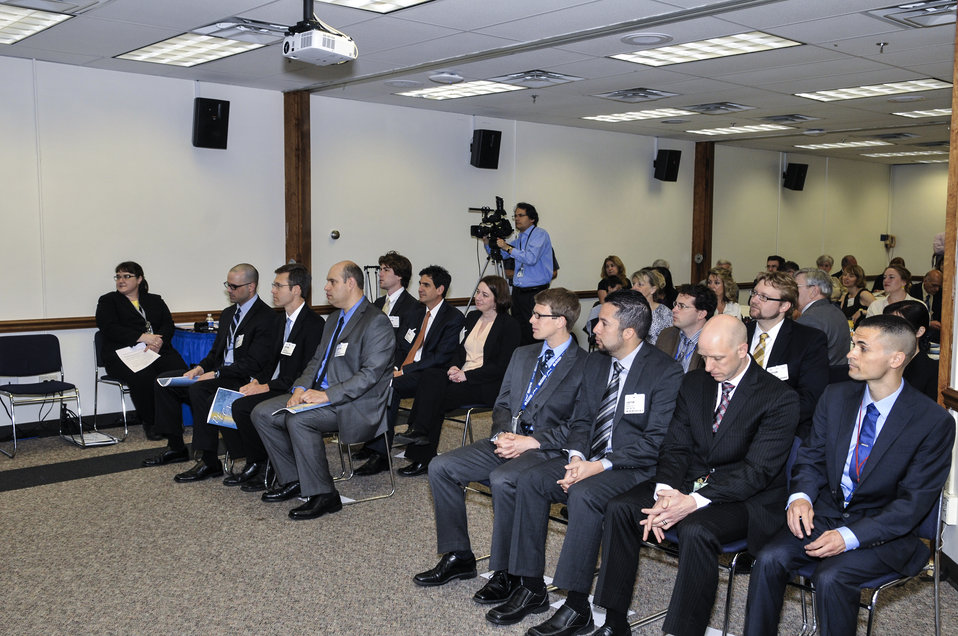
PECASE Awards: DOE Secretary E.Moniz on April 14, 2014